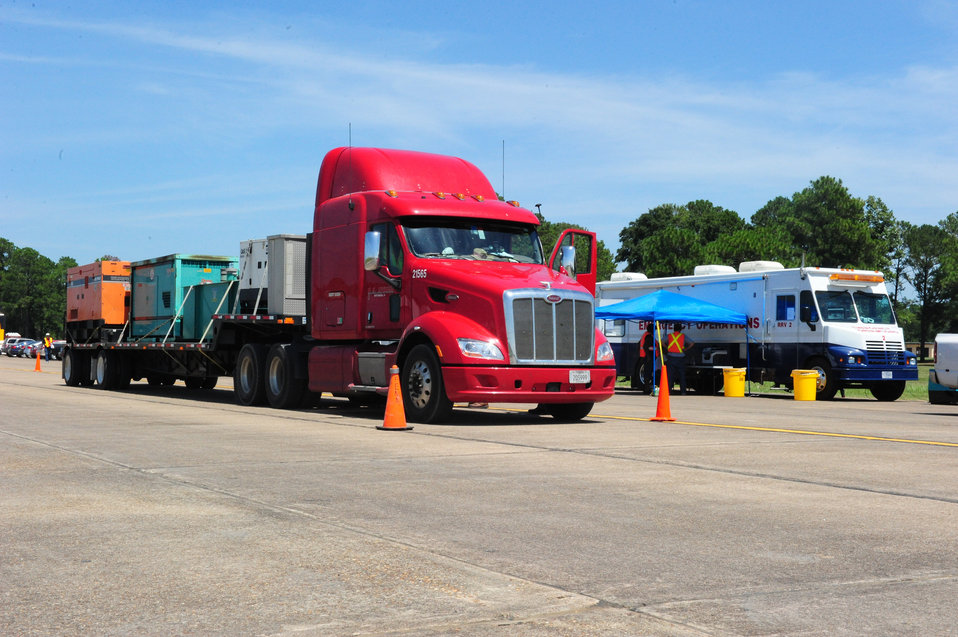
Maxwell, FEMA prepare relief supplies for Tropical Storm Isaac

Maxwell Air Force Base hosts Federal Emergency Management Agency trucks waiting to assist areas in the Southeast effected by Tropical Storm Isaac, Aug. 27. Beginning Saturday, more than 120 semi-trucks filled with water, food, medical equipment, blankets, cots and generators big enough for hospitals began flowing into the base.